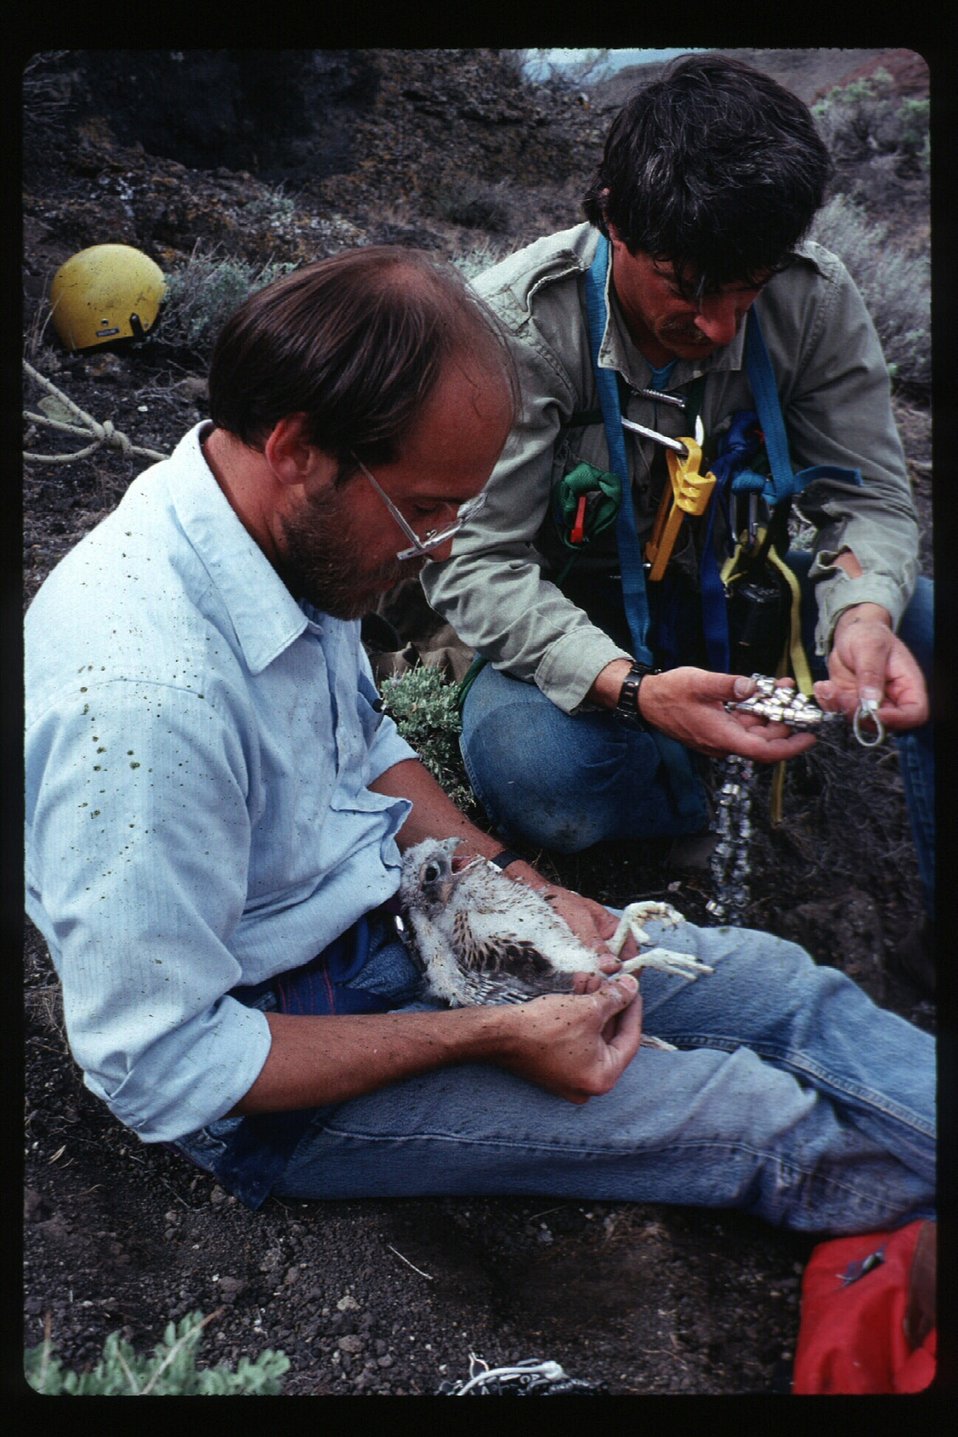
BOP NCA Birds of Prey National Conservation Area Banding Prairie Falcons Owyhee Field Office LSRD Lower Snake River District